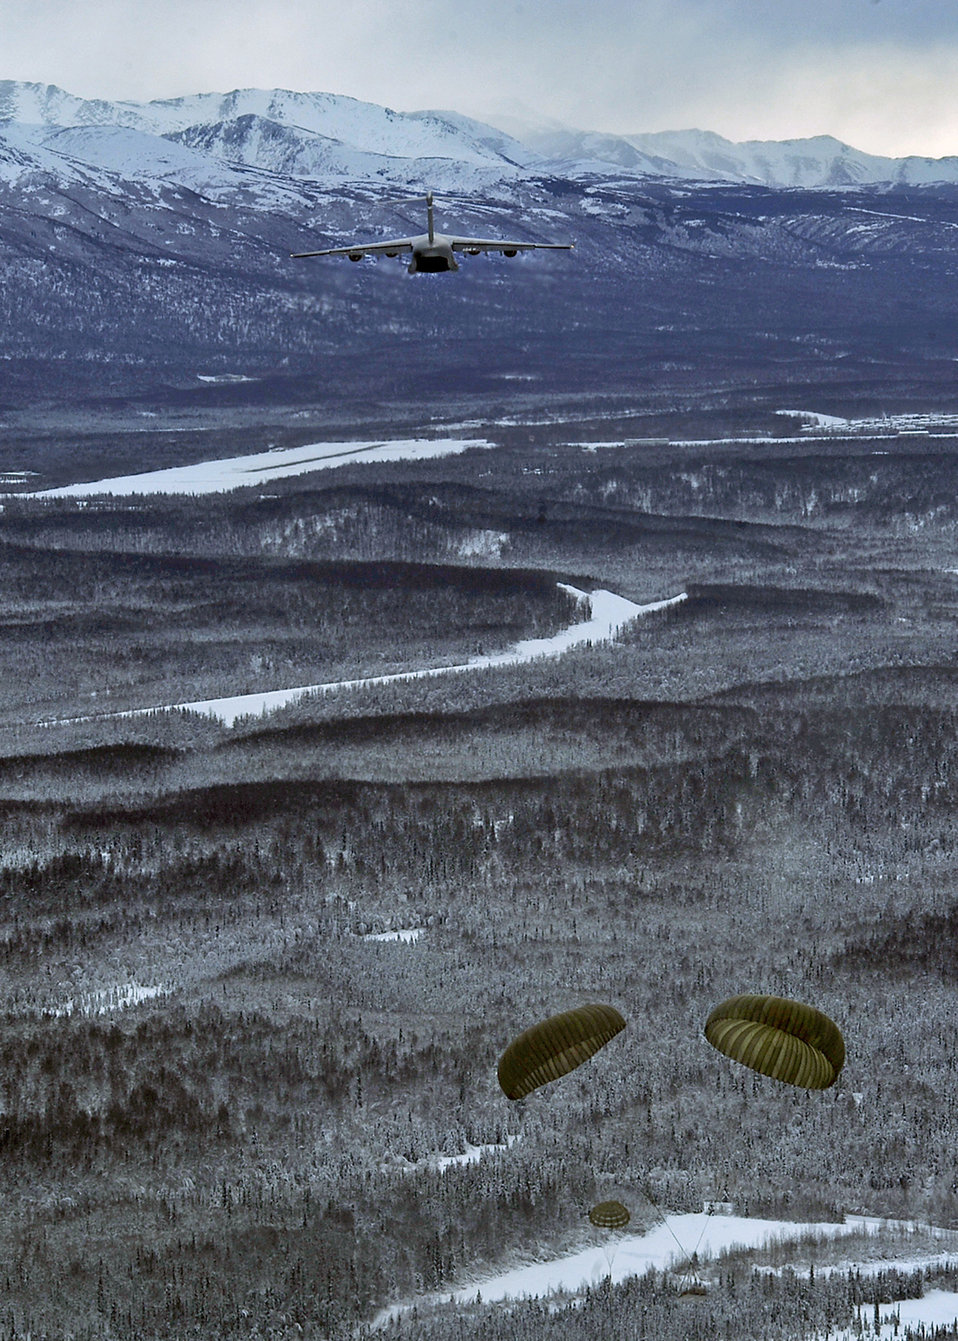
C-17s participate in Pacific Rendezvous

A C-17 Globemaster IIIs from the 517th Airlift Squadron drops its cargo over the drop zone near Katchemak Bay, Alaska, Feb. 10, 2010. The aircraft were participating in an exercise that involved Pacific Air Force and Air Mobility Command C-17s exploring capabilities in large formations and improving tactical awareness among aircrews.